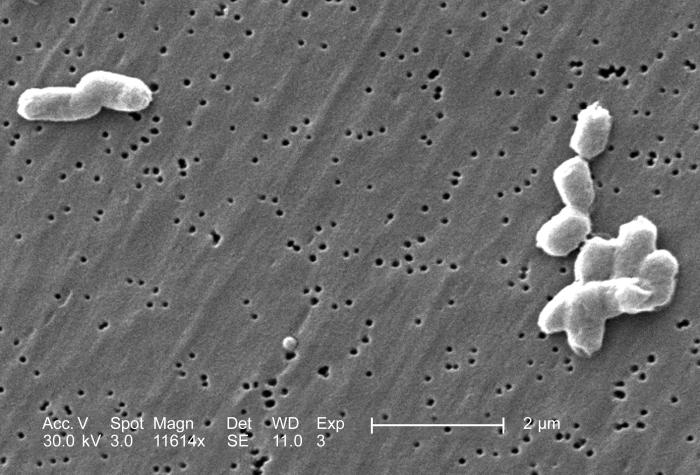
This scanning electron micrograph (SEM) depicts a number of highly magnified rod-shaped, motile, Gram-negative Salmonella infantis bacteria, some of which are attached; Magnification 11614x.